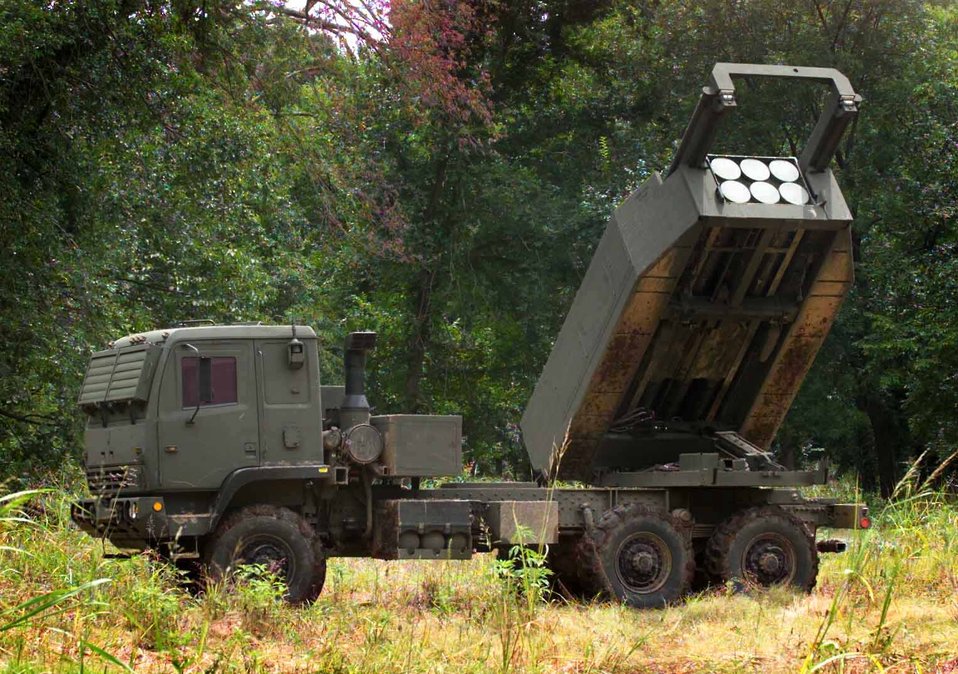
Fast fire

FORT SILL, Okla. -- The new High Mobility Artillery Rocket System prepares to process a mock fire mission during testing here recently. For the first time, the Army's HIMARS was combat loaded with rockets, flown by a C-130 Hercules to an assault landing zone here, and then fired a six-round live-fire mission Nov. 19. The evaluation was a joint effort of soldiers, airmen and Marines.